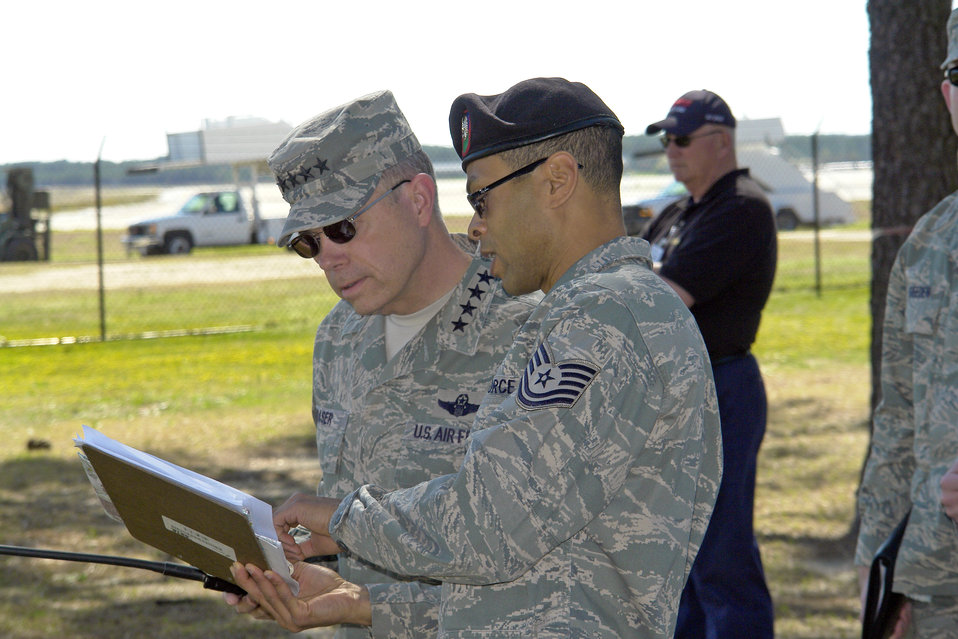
ACC leader visits mobility base

Gen. William M. Fraser III and Tech. Sgt. Jeff Porter review and discuss the Airborne Assault Demonstration April 4, 2010, on the flightline at Pope Air Force Base, N.C. General Fraser is the commander of Air Combat Command. Sergeant Porter is from the 14th Air Support Operations Squadron.